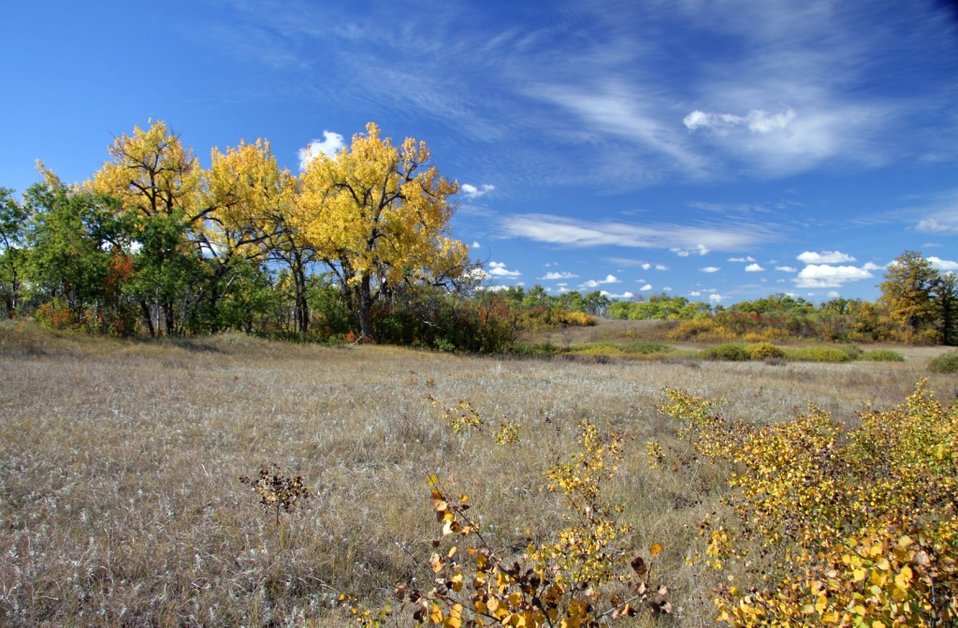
View at J. Clark Salyer National Wildlife Refuge

Sandhills at J. Clark Salyer National Wildlife Refuge in North Dakota.